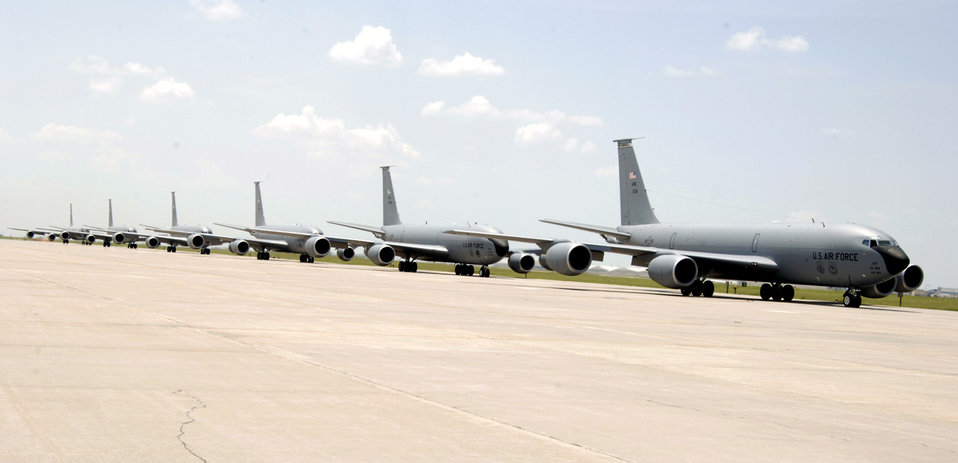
Elephant walk

Six KC-135 Stratotankers demonstrate the elephant walk formation as they taxi down a runway right behind each other during a generation exercise Aug. 5 at McConnell Air Force Base, Kan. The exercise showcased McConnell AFB aircrews' capability to prepare a flight and take off within minutes of being notified of a mission.